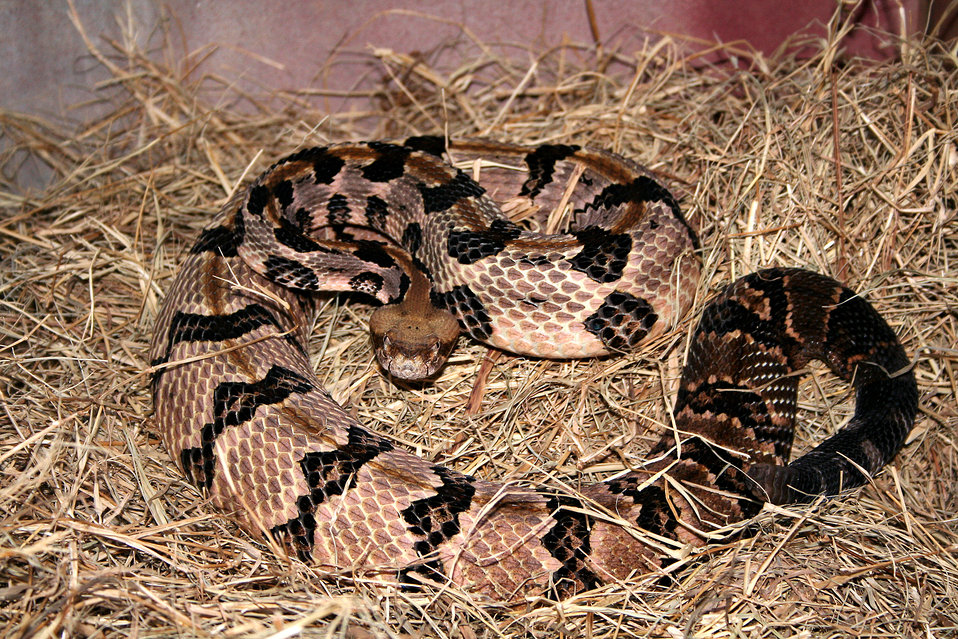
This 2005 image depicted a 'timber rattlesnake', Crotalus horridus, a large, heavy bodied, banded rattlesnake that ranges throughout a large portion of eastern and central North America, placing it in hurricane-prone areas, which is of importance to those living in these regions, and first-responders offering aid to those affected by such a disaster.Its ground color varies across its geographic range, but is generally yellow to tan with variable amounts of black stippling (Connant 1975). With its long fangs, it's able to introduce large amounts of potent venom per bite. Laboratory and field evidence suggest that the venom from individuals originating from certain populations in the South contain larger fractions of neurotoxic peptides than their northern counterparts (Tennant, 1998). The preferred habitat of the species varies across the range and includes upland deciduous forests, rocky ridges, riparian corridors, cypress swamps, cane reed thickets and wet prairie regions.